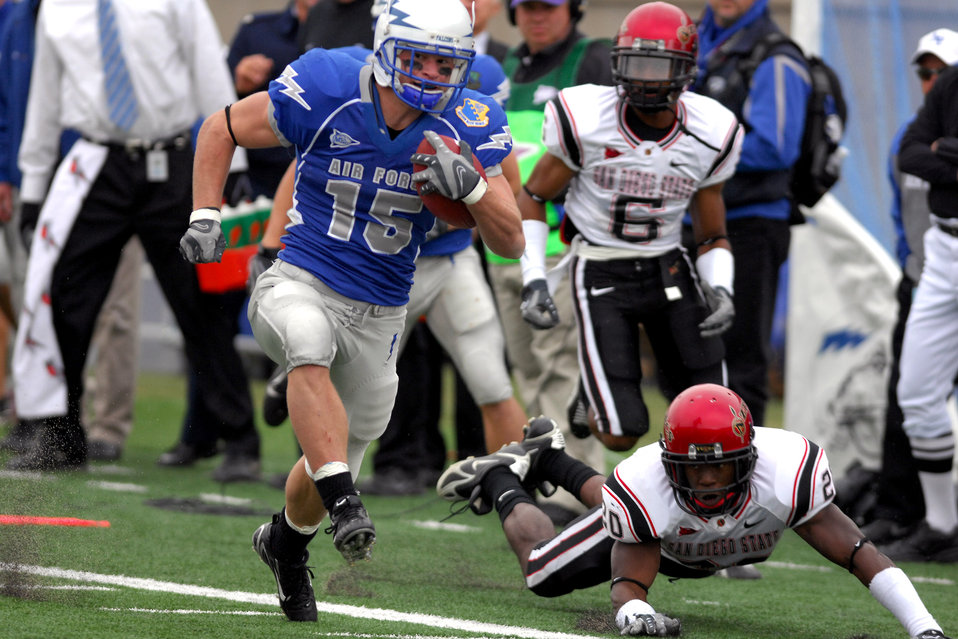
Football: Bowl-bound Falcons dominate regular season finale

Falcon tailback Jim Ollis high steps down the sideline past San Diego State strong safety Ray bass during Air Force's 55-23 win over the Aztecs Nov. 17 at the Academy's Falcon Stadium. Ollis ran for a game- and career-high 163 yards and two touchdowns.